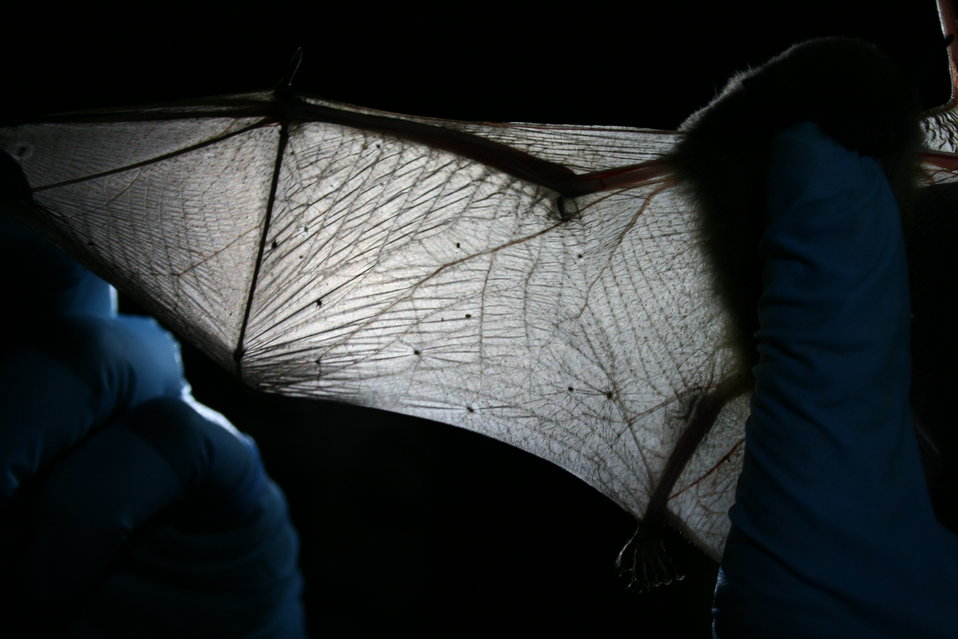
MDC biologist inspects bat wing